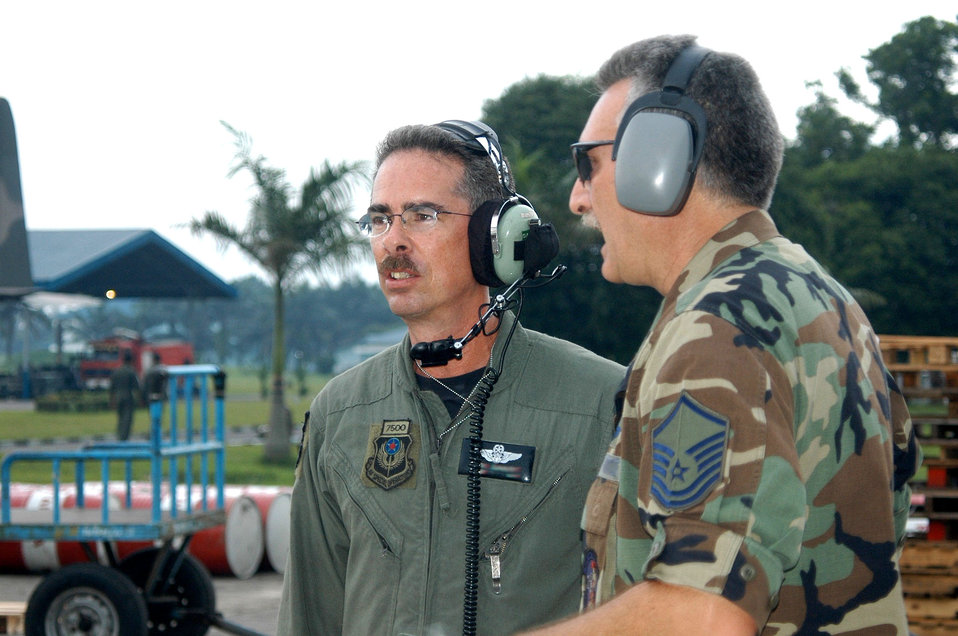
AFSOC unit wraps up Asian aid mission

MEDAN, Indonesia -- An Airman (left) with the 17th Special Operations Squadron at Kadena Air Base, Japan, talks with a ramp leader here.